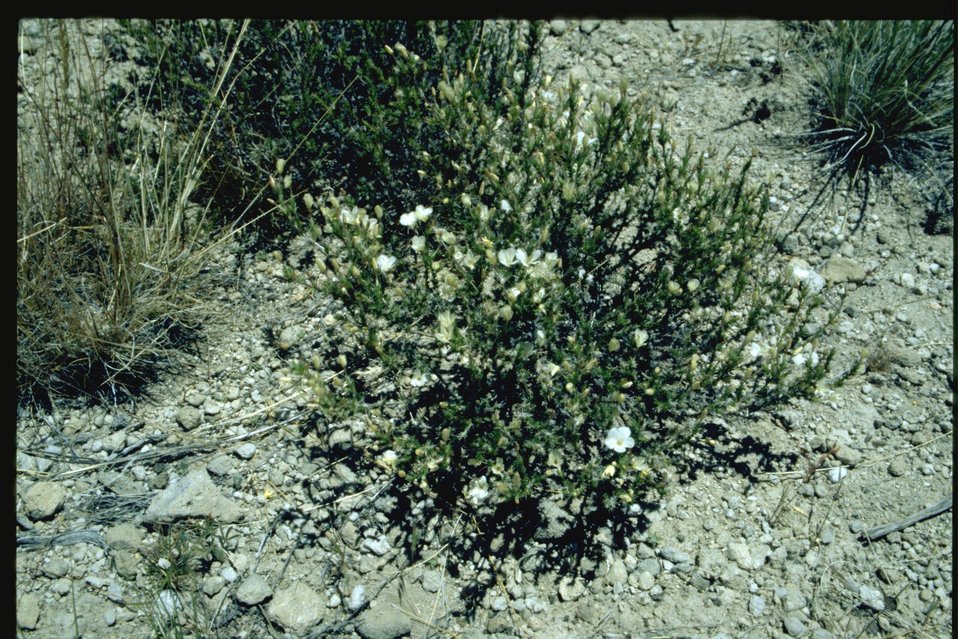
Medium shot of phlox habitat.